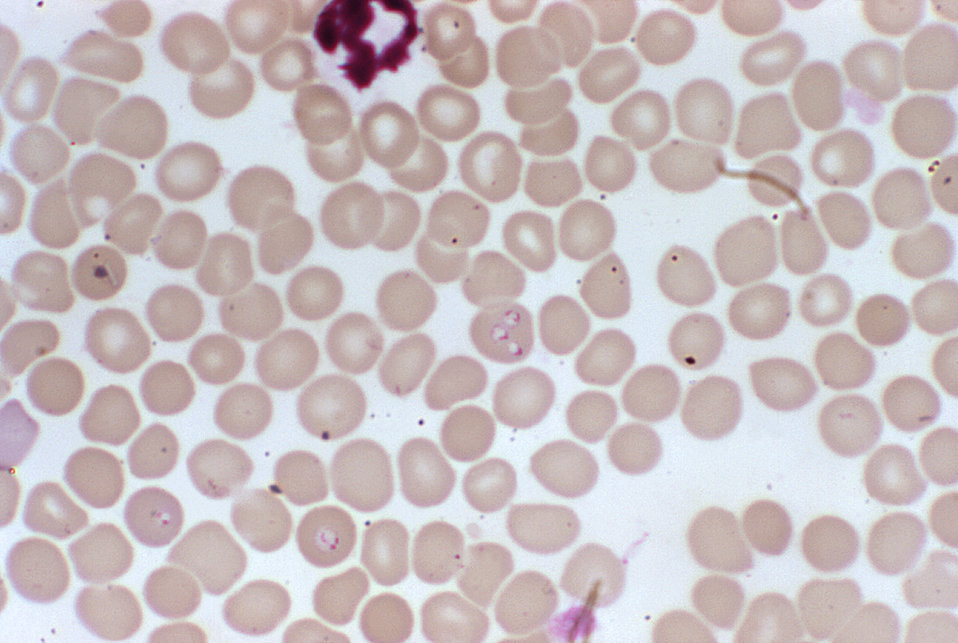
At a magnification of 1000X, this blood smear photomicrograph revealed the presence of a number of intra-erythrocytic forms of Babesia sp. hemoprotozoan parasites. Babesia parasites resemble Plasmodium falciparum, however Babesia has several distinguishing features: the parasites are pleomorphic (vary in shape and size), can be vacuolated, and do not produce pigment.